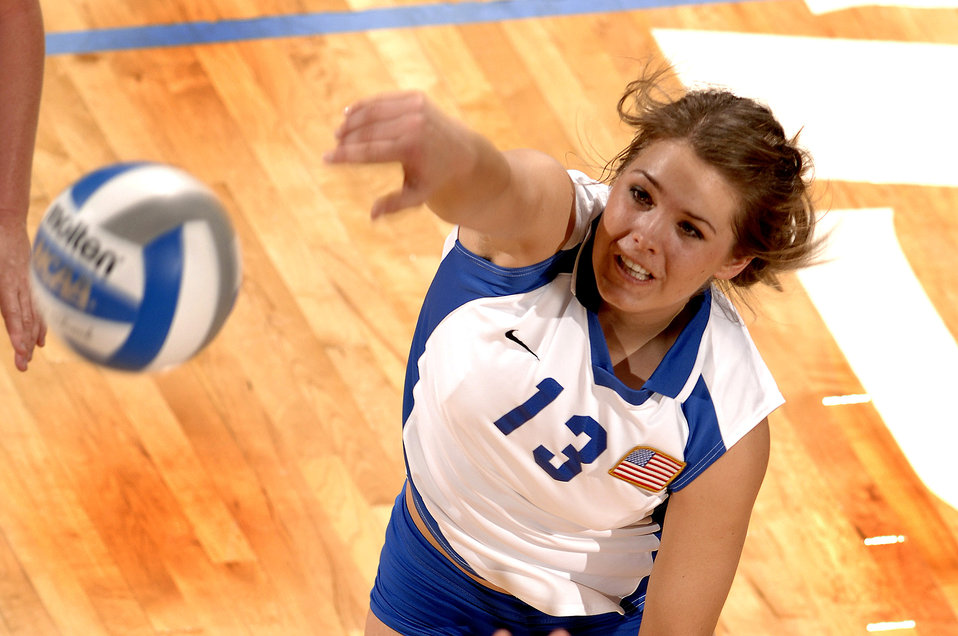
Volleyball: Falcons suffer tough losses

U.S. Air Force Academy freshman Caroline Kurtz goes airborne for the one of her six kills against Brigham Young University as the Air Force volleyball team dropped a three-game decision to the 23rd-ranked Cougars Sept. 29 at the Academy's Clune Arena in Colorado. The Falcons return to the road to take on the San Diego State Aztecs Oct. 4 before heading to face the University of Nevada, Las Vegas Oct. 6.